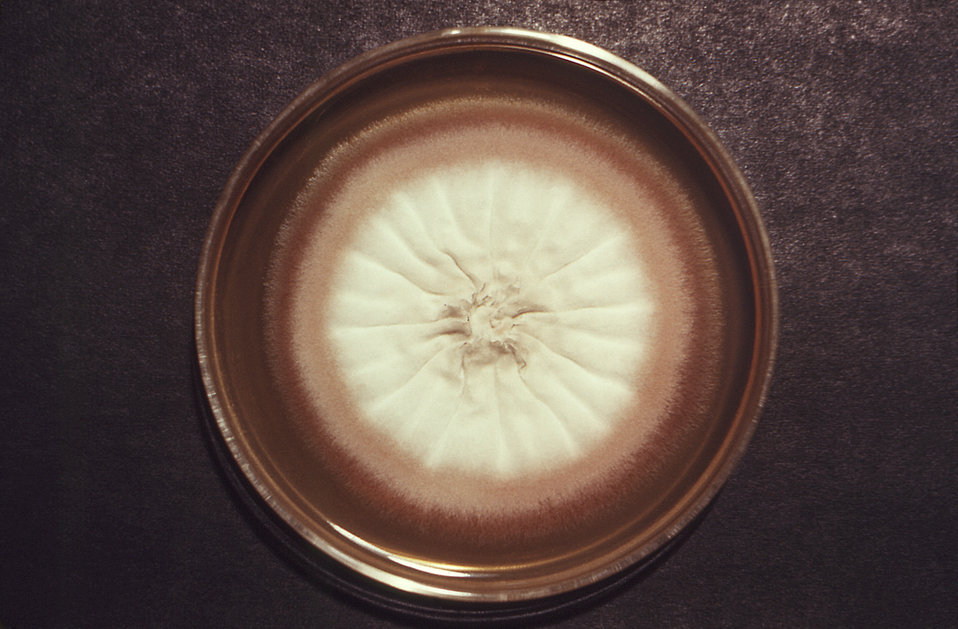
This image depicts a Petri dish containing an agar growth medium, atop which a single large anthropophilic colony of Trychophyton megninii, strain A-302, fungal organisms had taken shape. This dermatophyte causes fungal infections in humans involving the skin, hair, and nails. This colony exhibited its characteristic glabrous (smooth), slightly-ruffled surface, and an off-white to beige coloration. See PHIL 14950, for the appearance of a T. megninii fungal cology viewed from the reverse side of a Petri dish culture.